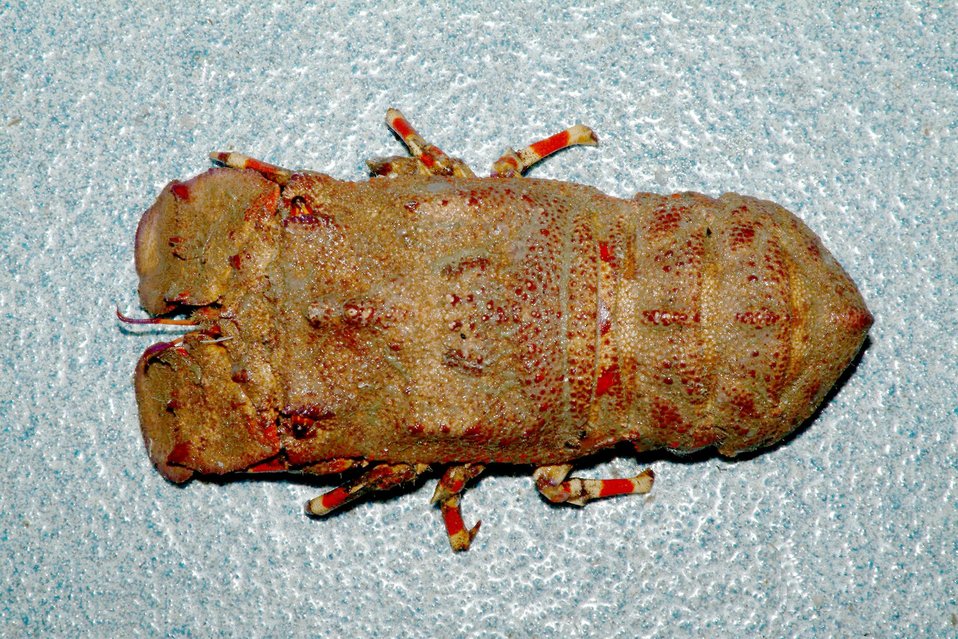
Ridged slipper lobster ( Scyllarides nodifer )